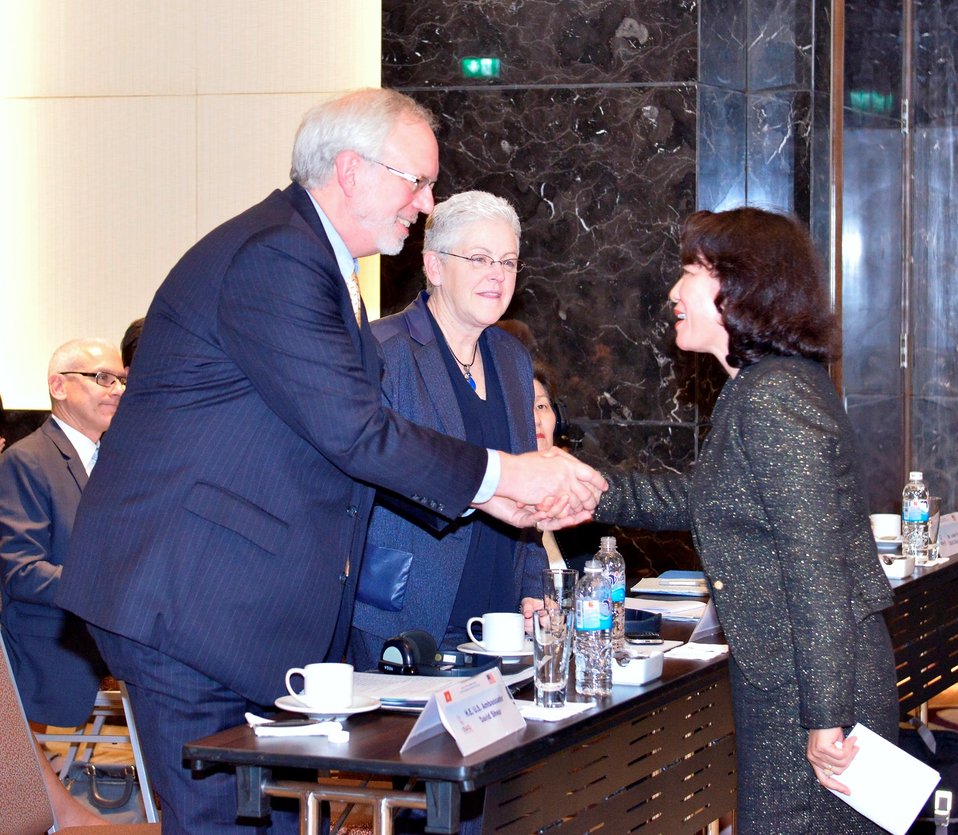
U.S. Ambassador David Shear (left), U.S. Environmental Protection Agency Administrator Gina McCarthy (center) and Mrs. Vu Thi Thu Thuy, Vice Chairwoman of Quang Ninh People’s Committee (right)

Hanoi, April 15, 2014.